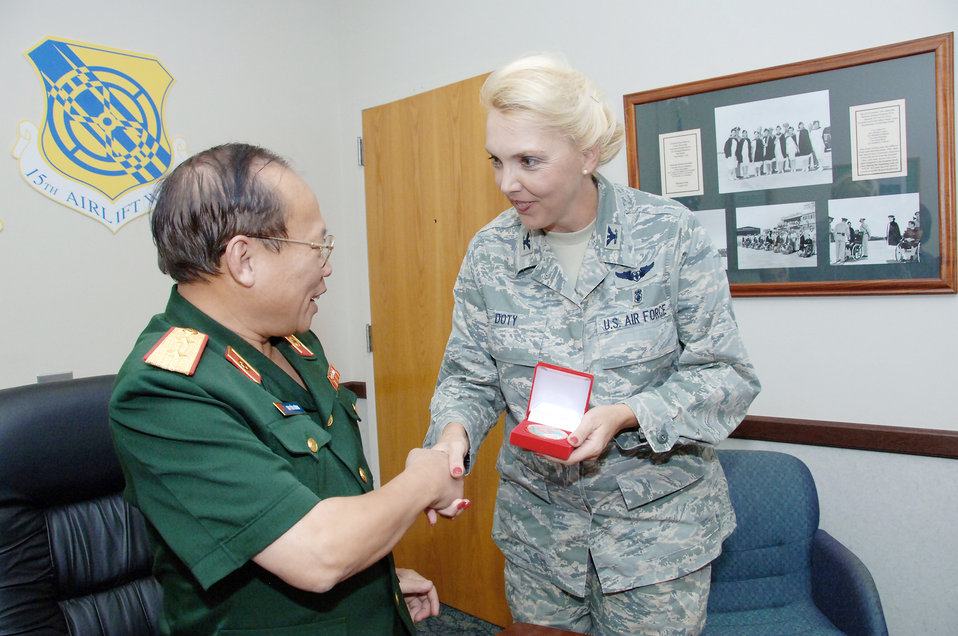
Vietnam military health, logistics reps visit Hickam

Lt. Gen. Chu, Tien Cuong, director of the Vietnam Military Medical Department, presents Col. Debra Doty, the 15th Medical Group commander, with a Vietnam military medical emblem during a visit to Hickam Air Force Base, Hawaii, Nov. 10, 2009. Six delegates from the Vietnam military health and general logistics fields met with U.S. Air Force officials at Hickam during a 13th Air Force-hosted visit. The delegates learned how the U.S. military conducts surveillance, screening and testing of infectious diseases, and how the U.S. Air Force plans and conducts logistics operations.